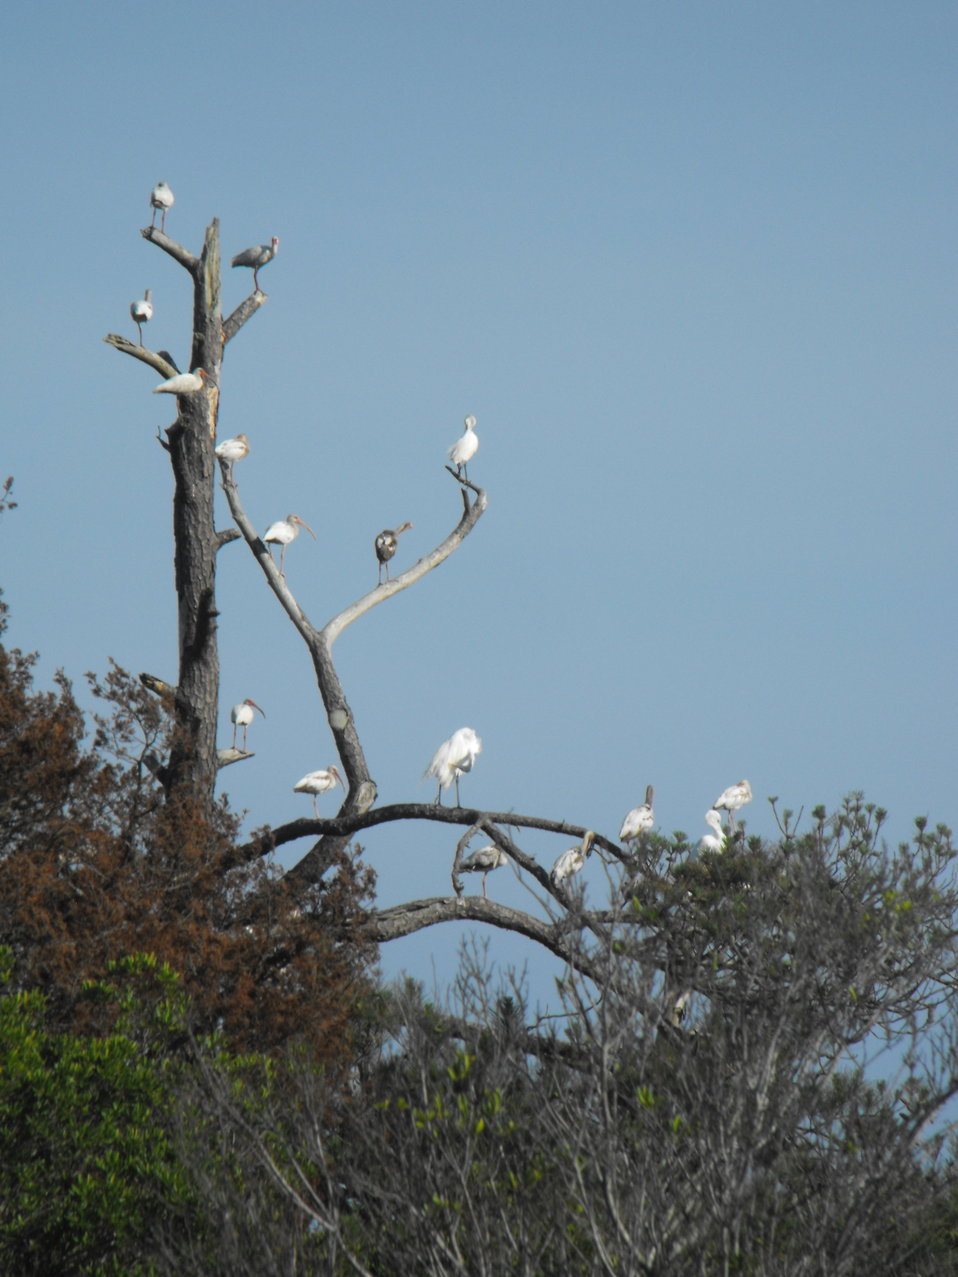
White ibis and egrets

White ibis (mature and immature) and egrets rest in a tree off of Swan's Cove Trail at Chincoteague National Wildlife Refuge.